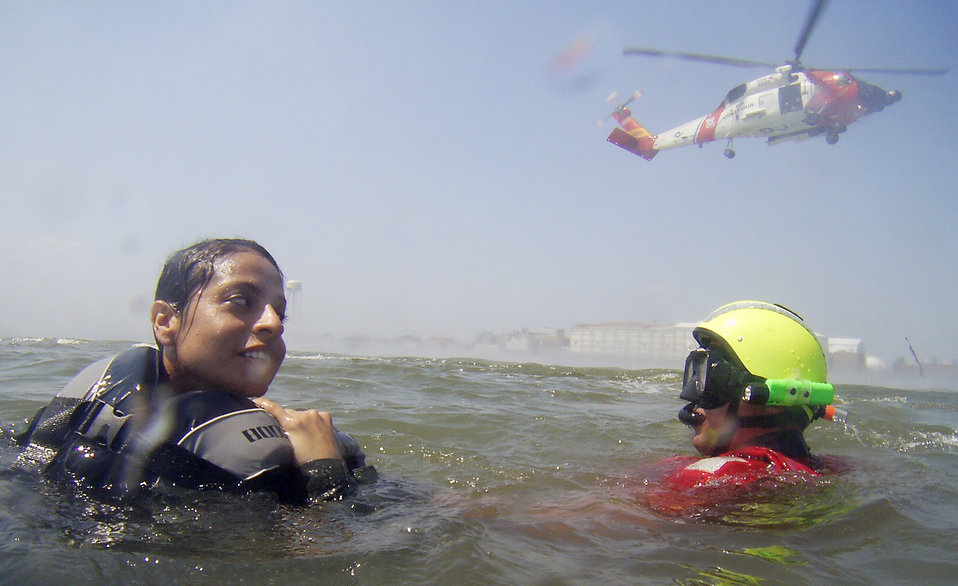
Out of the water

Coast Guard Petty Officer Third Class Michael Linehan steadies Staff Sgt. Vanessa Goris as she waits to be hoisted into a Coast Guard HC-60J Jayhawk rescue helicopter as part of water survival training Aug. 25 at Langley Air Force Base, Va. The Coast Guard, along with the nearby Hampton (Va.) Police Department, helped with the training. Sergeant Goris is assigned to the 1st Aerospace Medicine Squadron.